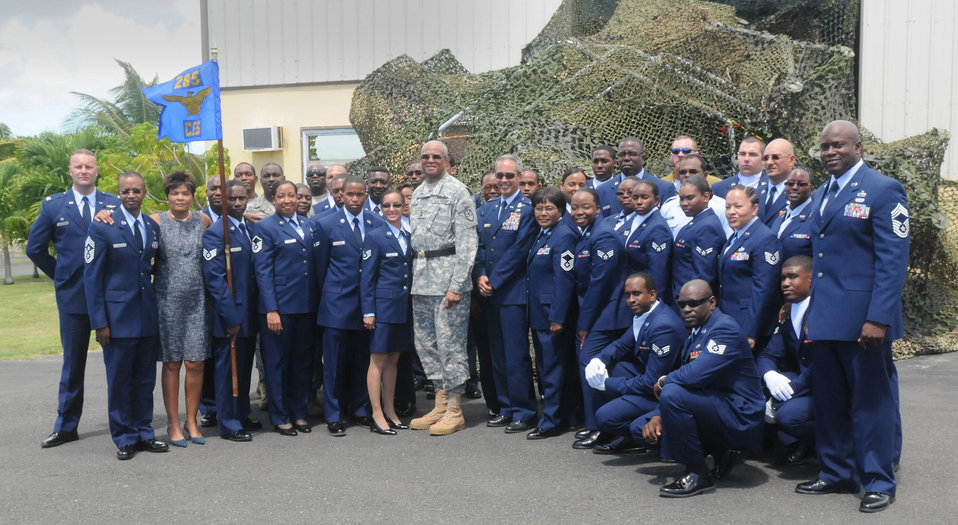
VI ANG unit re-designated

Maj. Gen. Renaldo Rivera, the adjutant general of the Virgin Islands National Guard and past and present unit members of the 285th Civil Engineering Squadron pose for a group shot after its re-designation ceremony at the Virgin Islands Air National Guard facility, Manning Hill, St. Croix, Mar. 3. The unit, formerly known as the 285th Combat Communications Squadron, transitioned from a communications unit to a rapidly deployable engineer unit. The Virgin Islands Air National Guard recently celebrated its 32nd birthday in February.